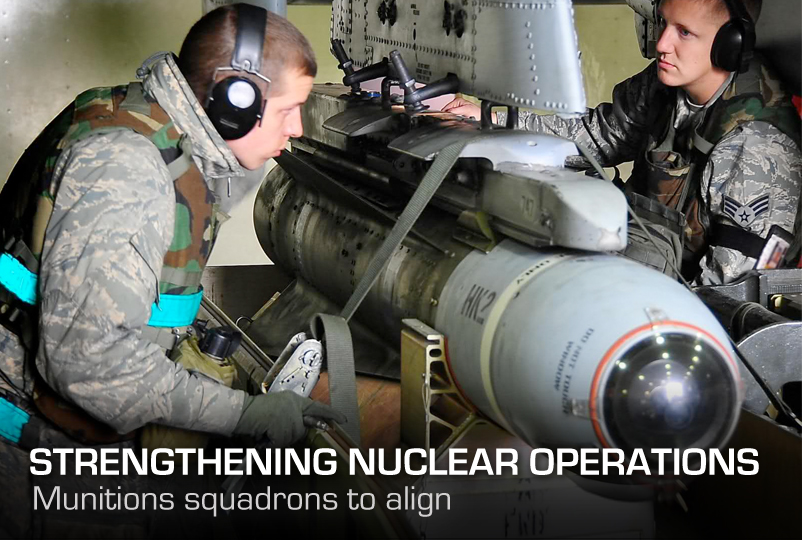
Strengthening Nuclear Operations